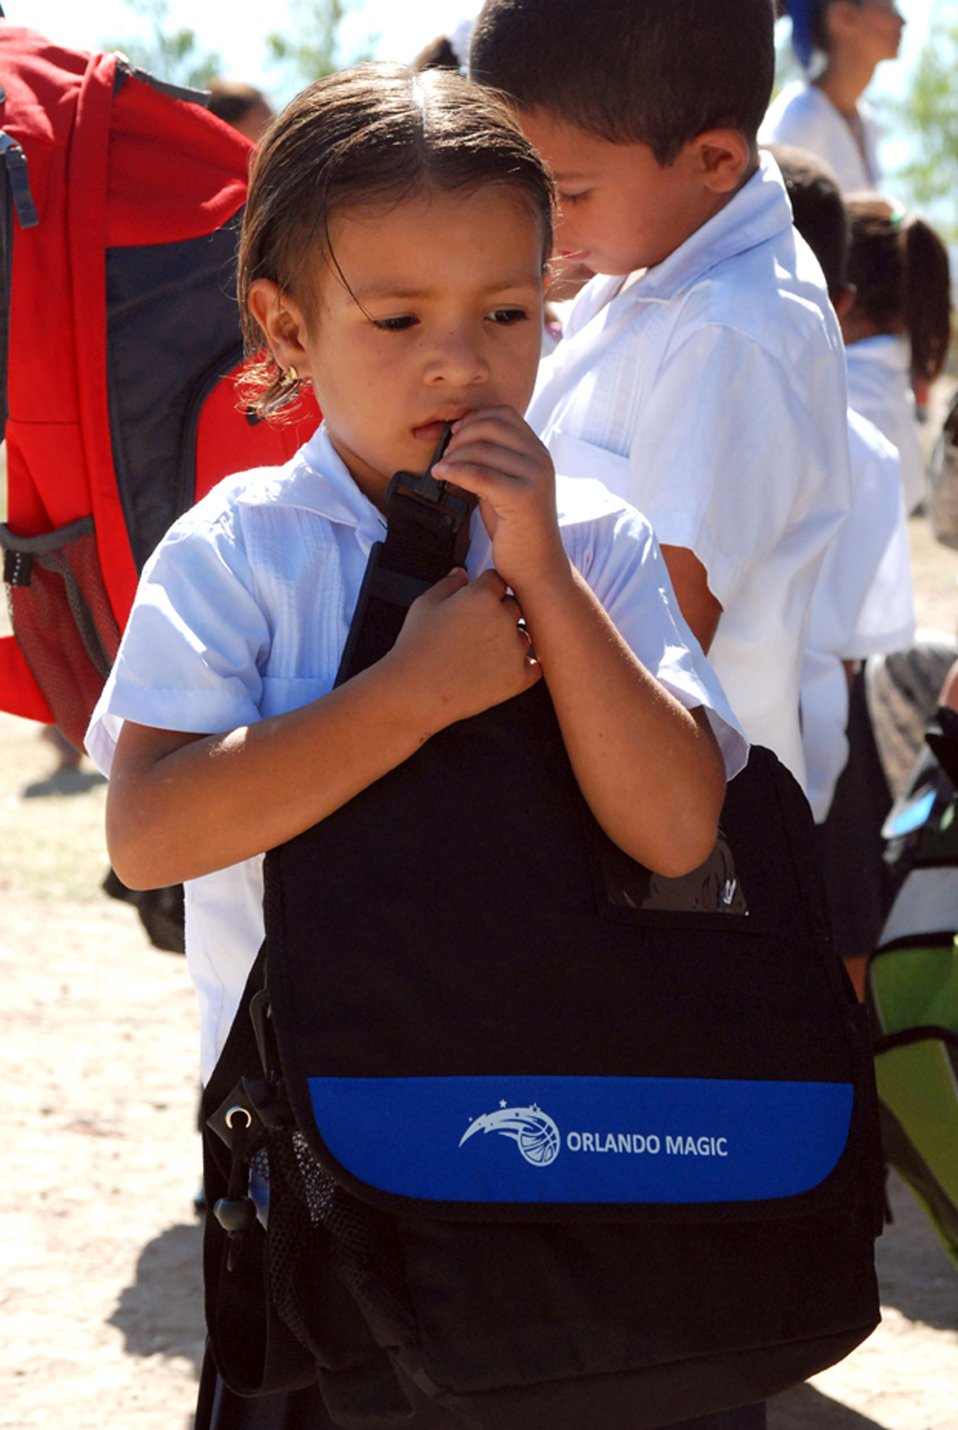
Servicemembers distribute supplies to Honduran school

A girl at the Carlos Sanchez school in La Paz, Honduras, holds a backpack packed with school supplies given to her Feb. 21 by troops from Soto Cano Air Base, Honduras. Five representatives from the Give a Kid a Backpack Organization in Florida and 15 volunteers from Joint Task Force-Bravo distributed more than 700 backpacks packed with school supplies to children at five schools and two orphanages in the Comayagua and La Paz districts.